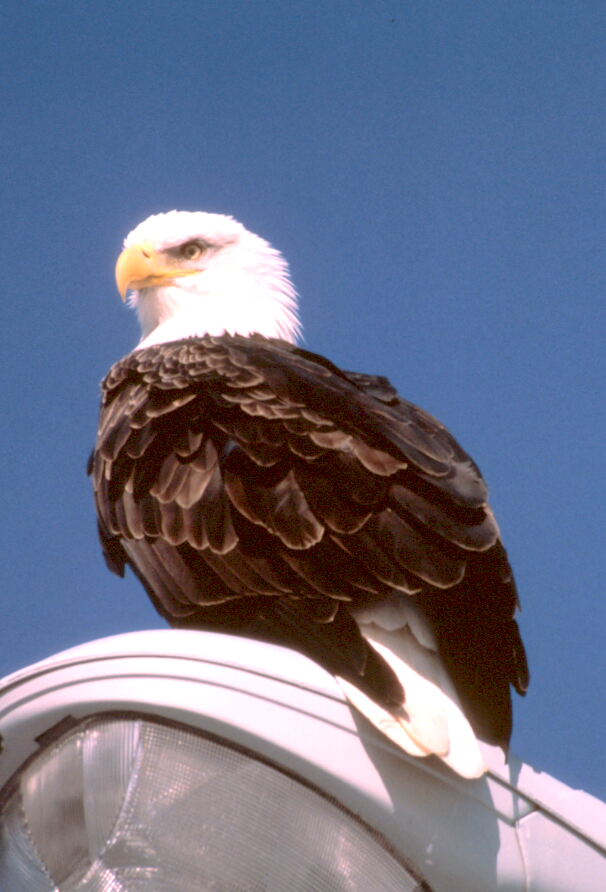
Bald Eagle.